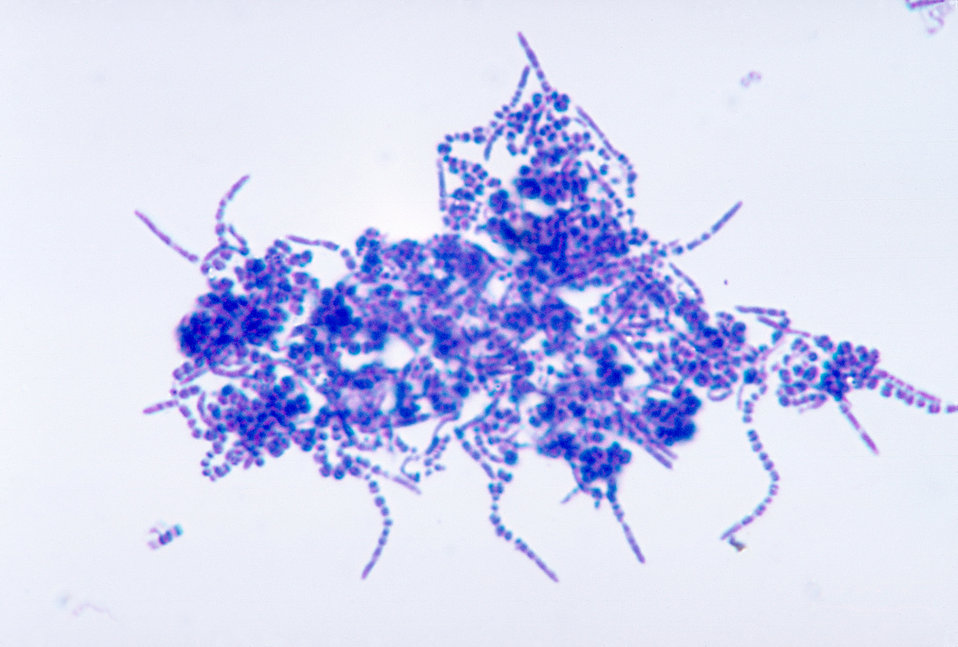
This micrograph demonstrates a clustering of Dermatophilus congolensis bacteria using a Giemsa stain.